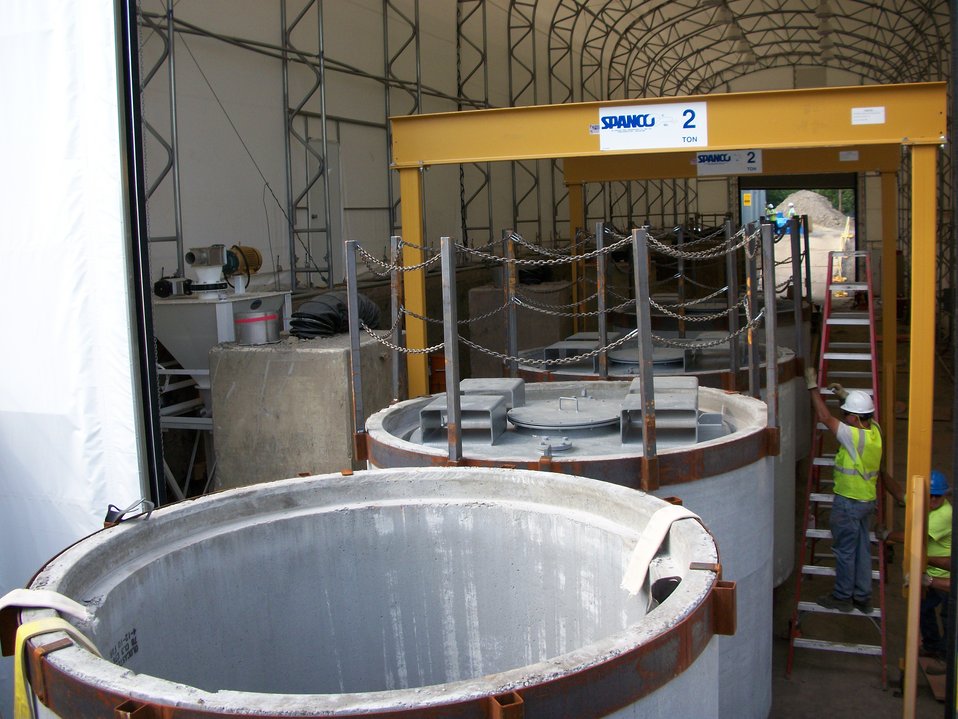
Recovery Act Makeover Improves Facilities for Naval Reactors Laboratory

Pictured here are waste liners that will be used to dispose of radioactive waste inside tanks at the Separations Process Research Unit.